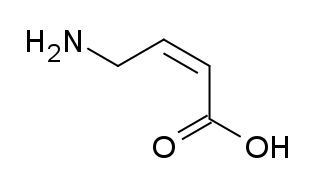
i drew this anyone can use it